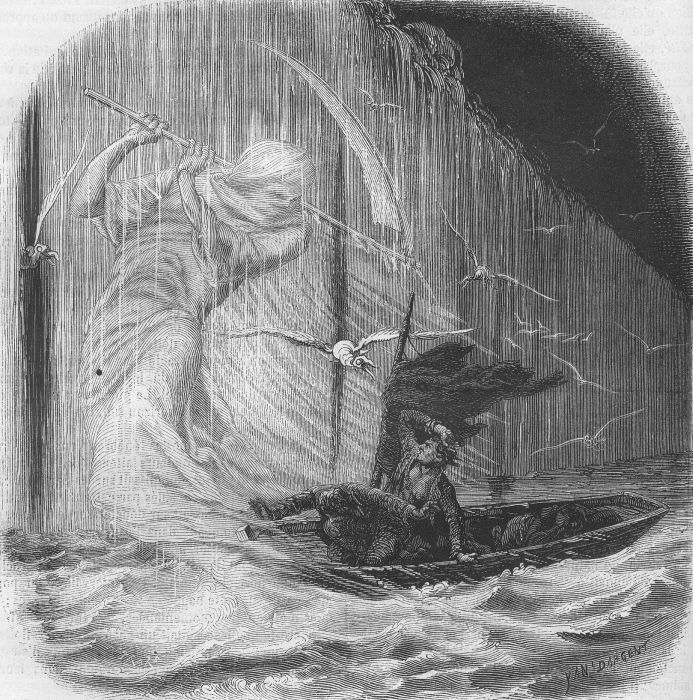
An illustration from Jules Verne's essay 'Edgard Poë et ses oeuvres' (Edgar Poe and his Works,1862) drawn by Frederic Lix or Yan' Dargent. Polski: Ilustracja artykułu Juliusza Verne'a 'Edgard Poë et ses oeuvres' (Edgar Poe i jego dzieła, 1862) autorstwa Frederica Lixa lub Yan' Dargenta. Français : Jules Verne: 'Edgard Poë et ses oeuvres' (1862), dessins par Frederic Lix ou Yan' Dargent. Orginal text: Français : Sur l’Océan antarctique, au quatre-vingt quatrième degré. L'apparition.